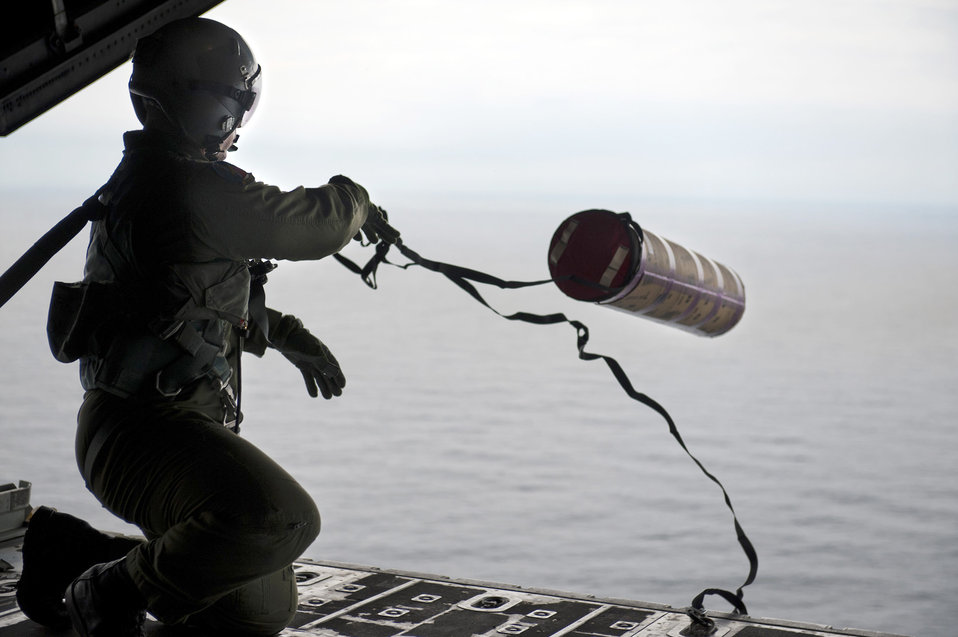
Letting go

Staff Sgt. Blake Landry deploys a buoy from a C-130 Hercules April 29, 2011, near the eastern coast of Japan. The buoy is designed to help scientists monitor ocean currents. Sergeant Landry is a loadmaster assigned to the 36th Airlift Squadron at Yokota Air Base, Japan.